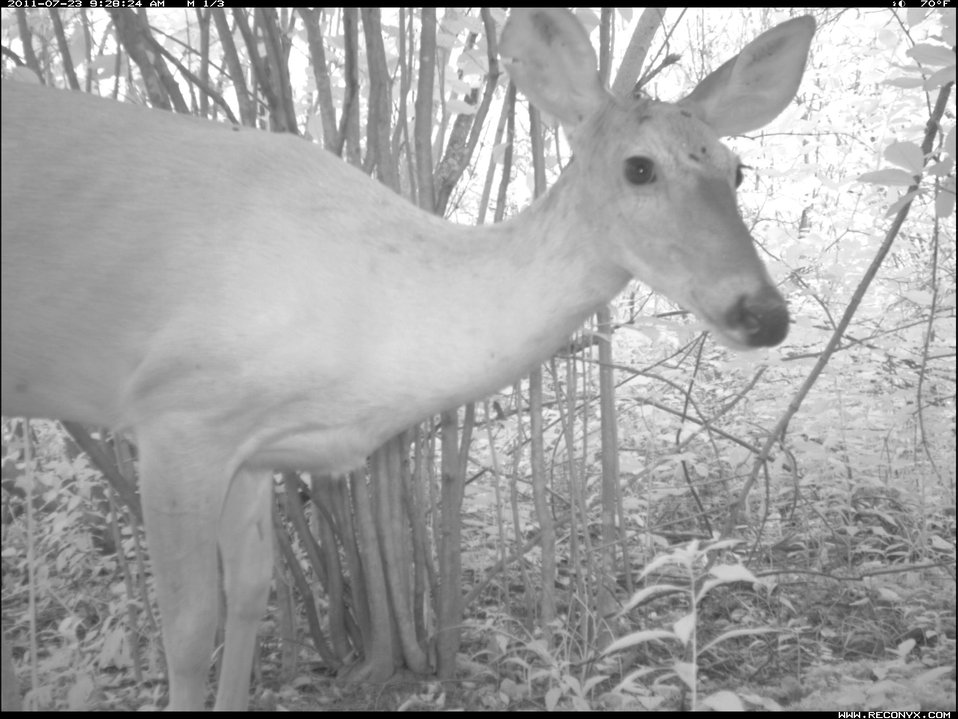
Female Deer (Doe)